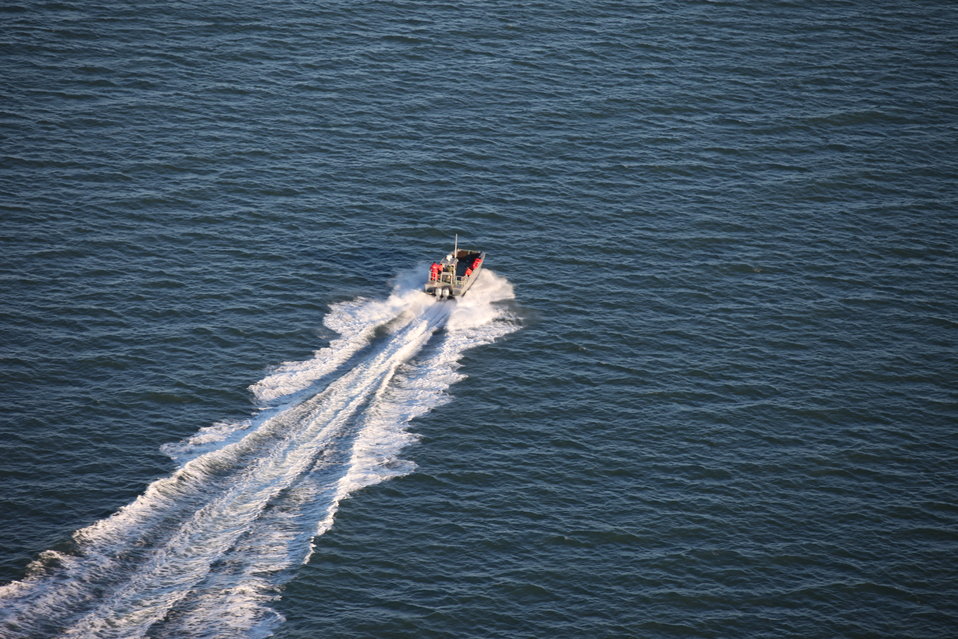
Stewart B. McKinney National Wildlife Refuge Boat (CT)

Stewart B. McKinney National Wildlife Refuge staff boat over to Faulkner Island to survey the damage caused by storm Sandy.